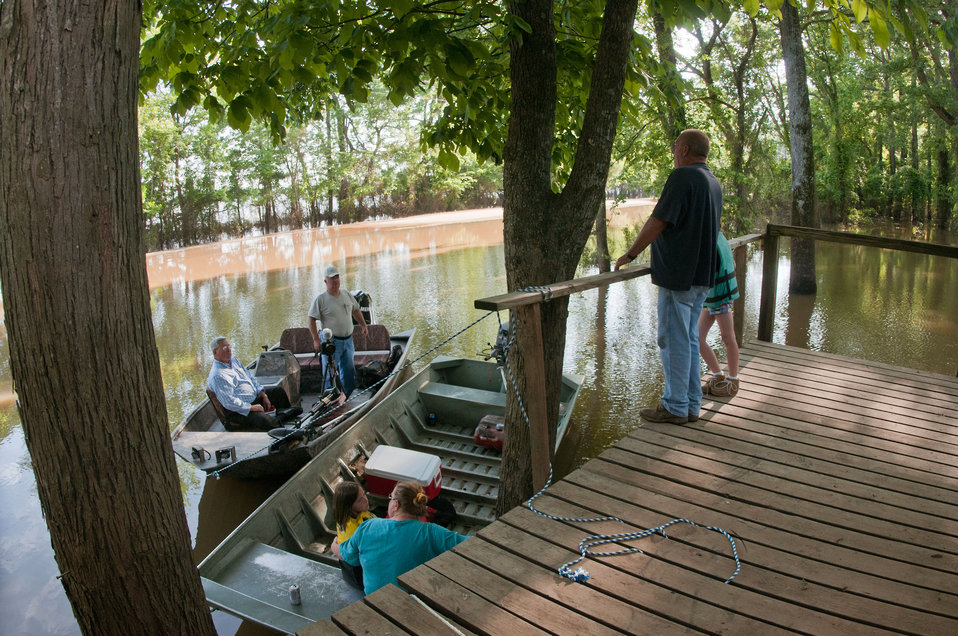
While surveying the flood water of Lauderdale County, Mayor Rod Schuh (long sleeve blue shirt) checks in on Robert (blue t-shirt) and Brenda Moffatt and their grand daughters Lindsey (10, yellow life jacket) and Katlyn (9). During the visit, on Saturday, May 21, 2011, Mayor Schuh learned that the Moffatts do not have flood insurance, and that their intended repairs will out of their own pocket. Schuh asked, if they would accept assistance.